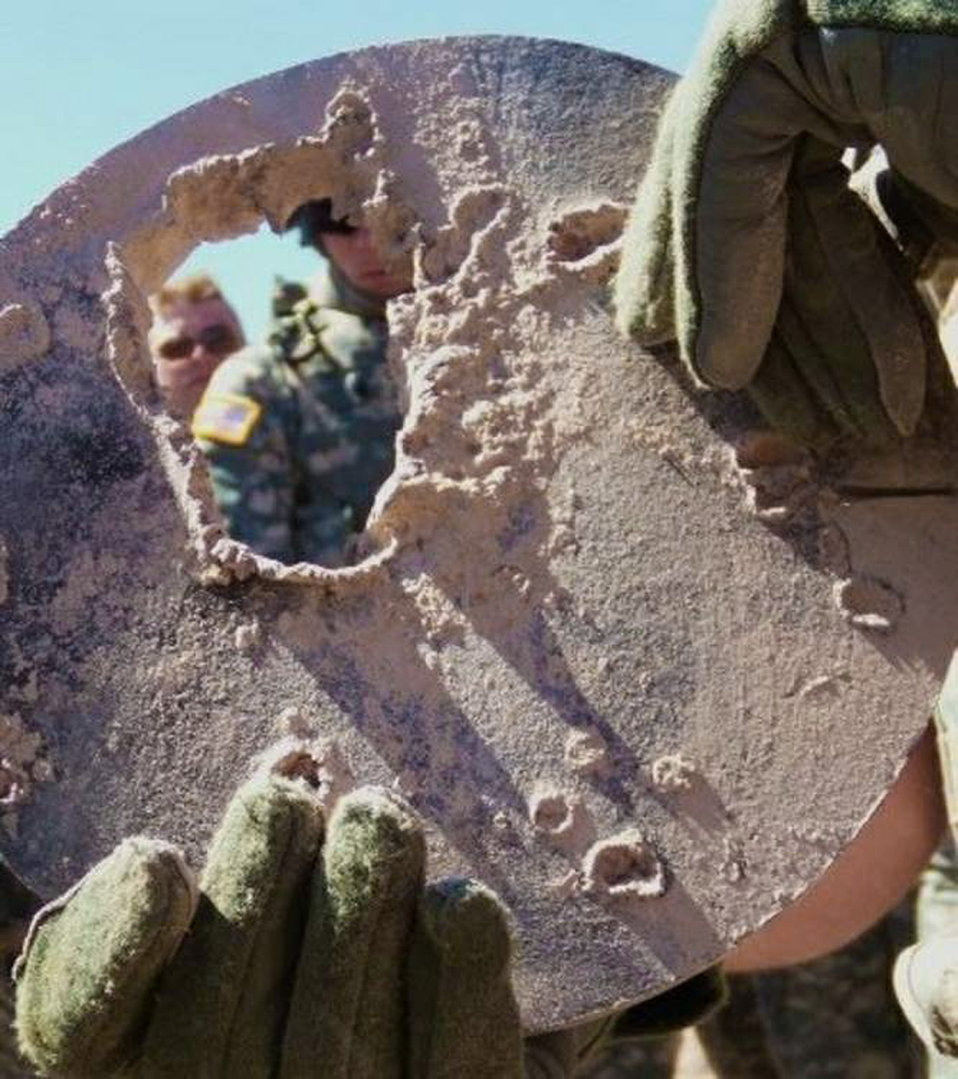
Battlefield detectives fight with fingerprints

Air Force, Navy and Army Weapons Intelligence Team members examine a result of a blast on a metal plate during explosive effects demonstration day April 2 at Fort Huachuca, Ariz. Potential WIT members received training in IED construction, fingerprinting, biometrics, foreign weapons, media exploitation and sensitive sight exploitation.